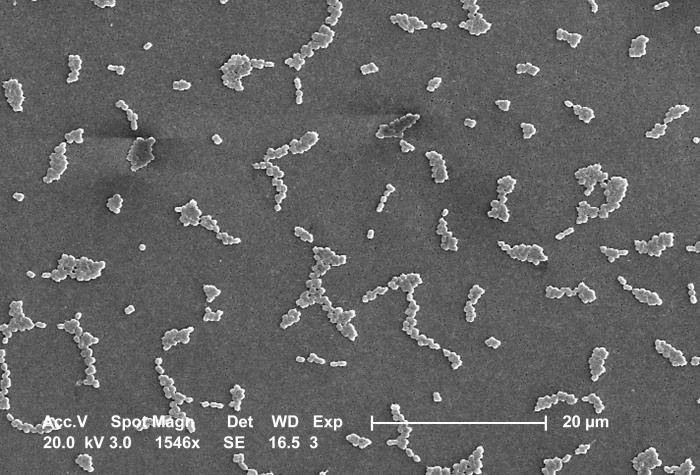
This SEM depicts a number of clusters of aerobic Gram-negative, non-motile Acinetobacter baumannii bacteria under a relatively low magnification of 1,546x. See PHIL 10096 for a colorized version of this image.